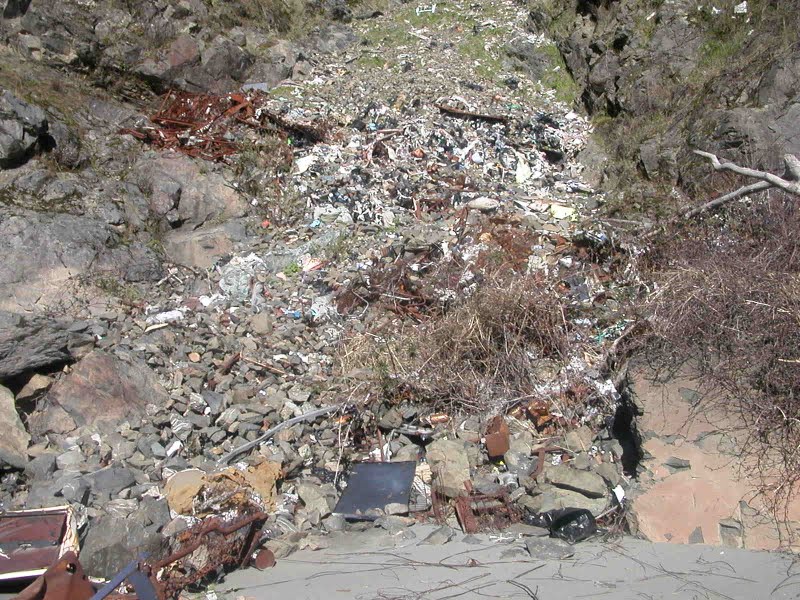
Debris dumped down a cliff onto gravel bank of Klamath River

Approximately 33 tons of illegally dumped trash and recyclables were dumped down a 400 to 500-foot cliff onto a gravel bank of Roaches Creek, which feeds into the Klamath River in Northern California. During high river flows the debris could be carried to the Pacific Ocean. In October 2008, the California Integrated Waste Management Board and the Yurok Tribe cleaned up this site.